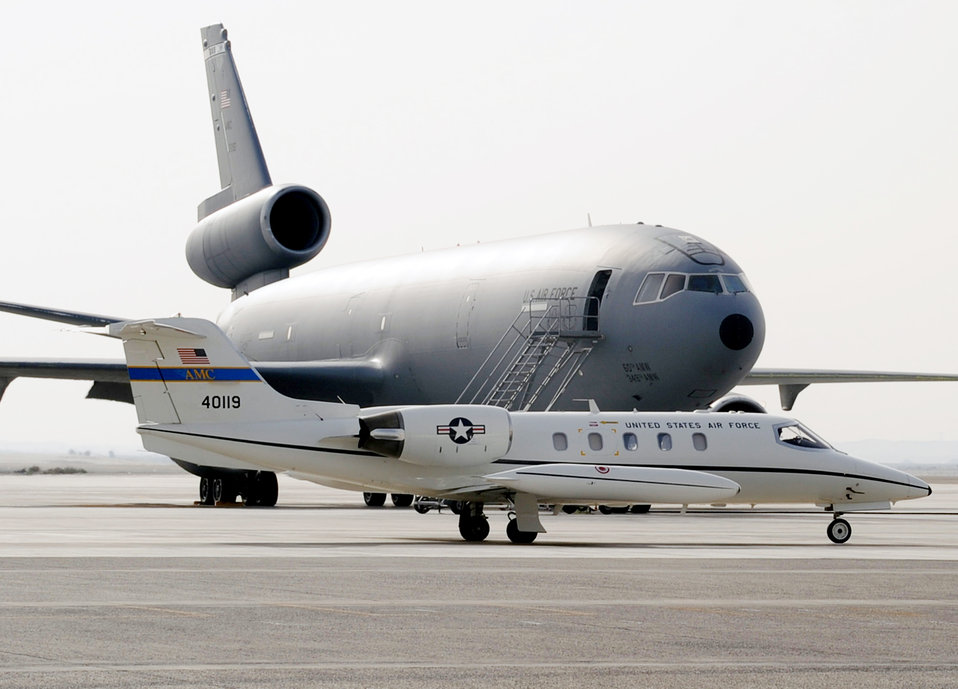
Hi, big brother

A C-21 taxis in front of a KC-10 Extender on the parking ramp of an air base in Southwest Asia Feb. 11, 2010. Both aircraft are part of Air Mobility Command which provides mobility functions in support of overseas contingency operations around the world.